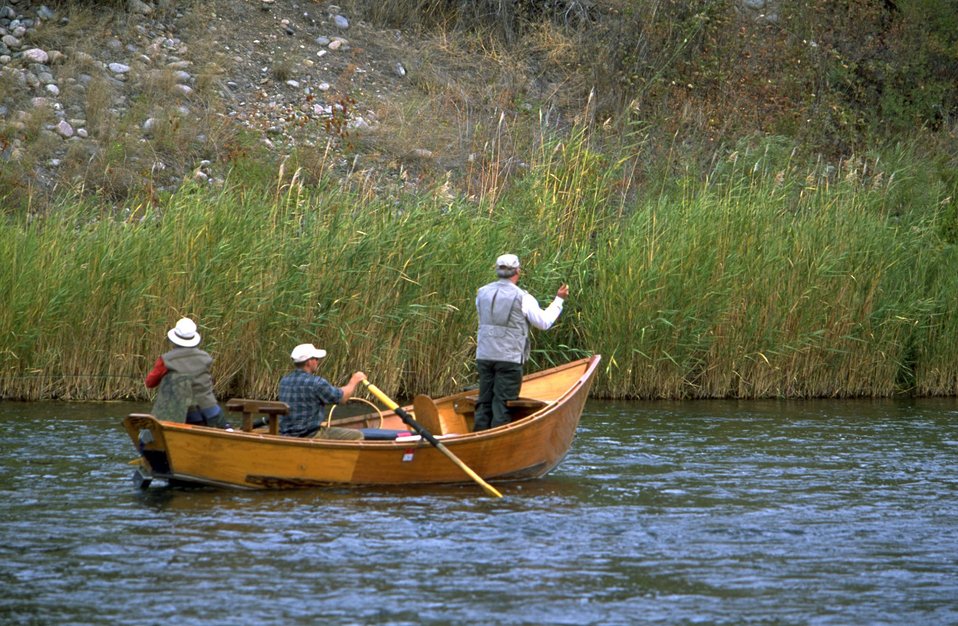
Float Fishing on the Madison River